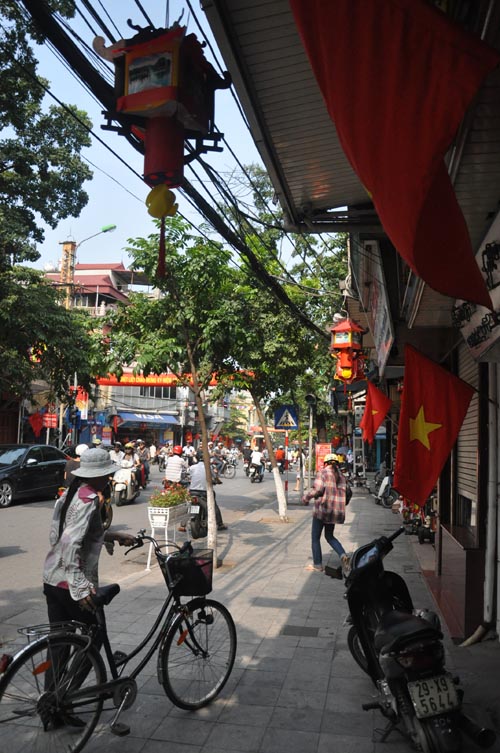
Hanoi celebrates 1,000 years as capital of Vietnam.